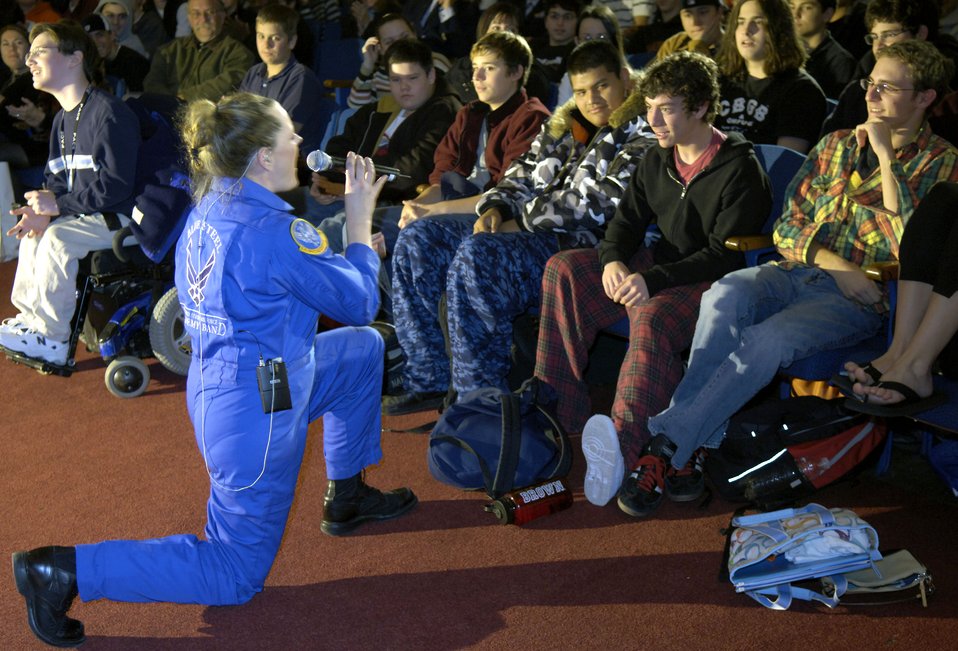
Academy Band

Tech. Sgt. Julie Bradley serenades students at Mamaroneck High School in New York, Nov. 22. Sergeant Bradley is a member of the U.S. Air Force Academy Band, Blue Steel. The band's performance was just one of several concerts they will peform in New York throughout the holiday weekend.